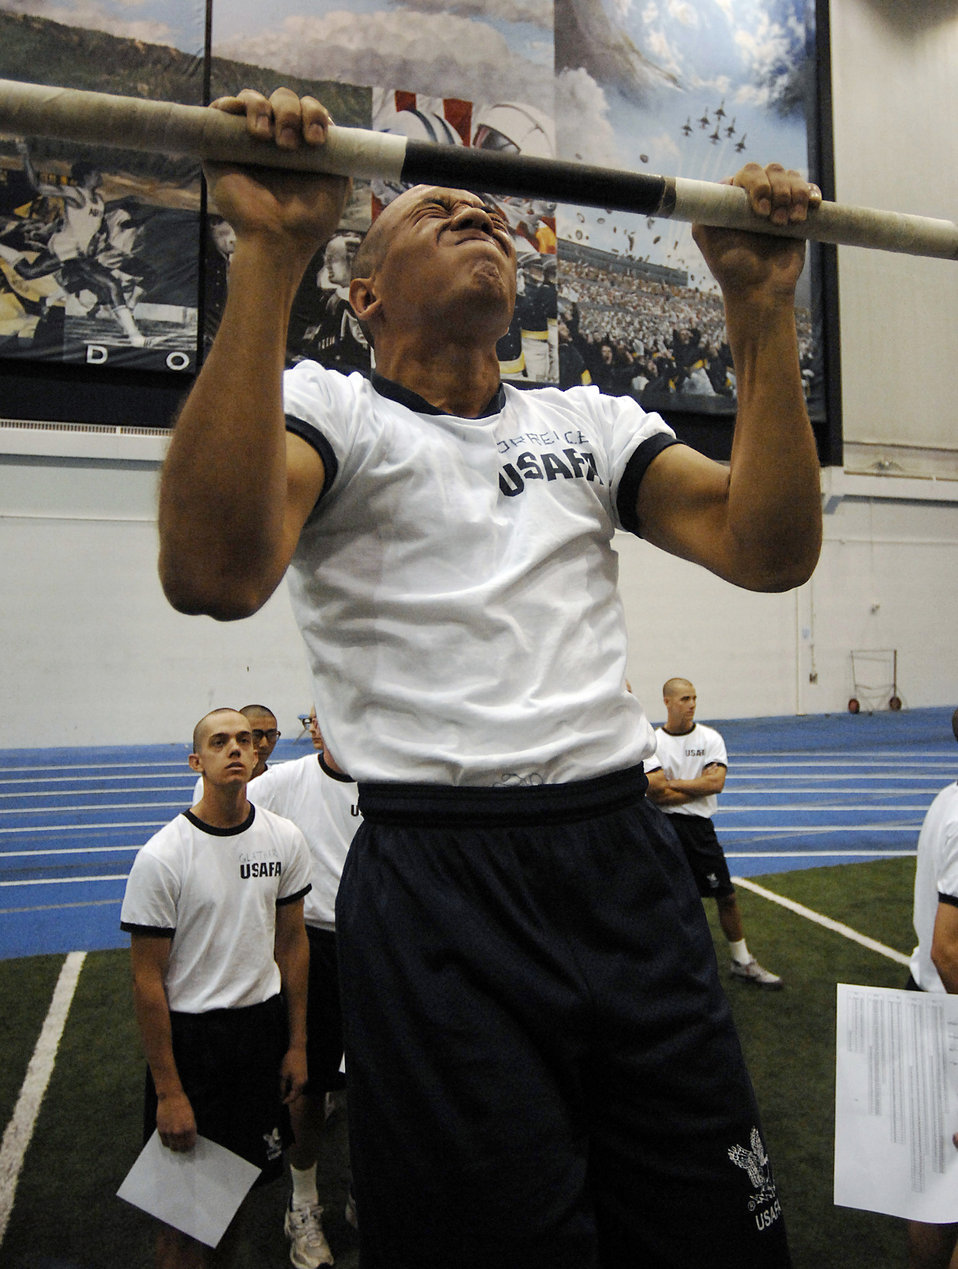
Put to the test

Cadet Matthew Torrence tries for one last pull up during his physical fitness test July 12 at the U.S. Air Force Academy, Colo. Males need 21 pull ups to receive maximum points. The Academy received 9,162 application for this year's class in which only 1,600 were offered appointments. These first-year cadets receive basic discipline and skills to help develop them into officers.